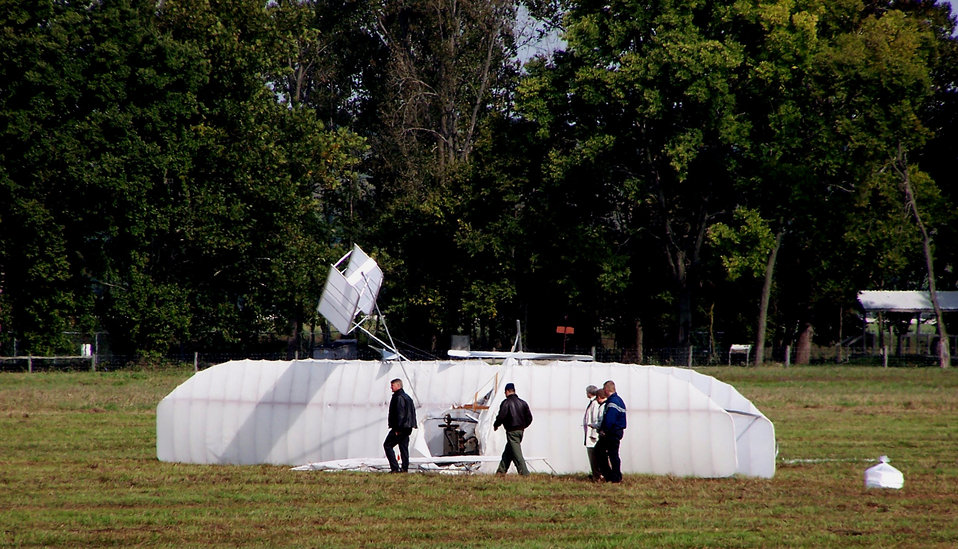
Wright Flyer replica crashes

Air Force crash rescue and safety personnel inspect the wreckage of a replica 1905 Wright Flyer III that crashed Oct. 1, 2009 on Huffman Prairie Flying Field at Wright-Patterson Air Force Base, Ohio. Pilot and vintage aircraft builder Mark Dusenberry of Dennison, Ohio, was injured during the practice flight in preparation to celebrate the 104th Anniversary of Practical Flight.